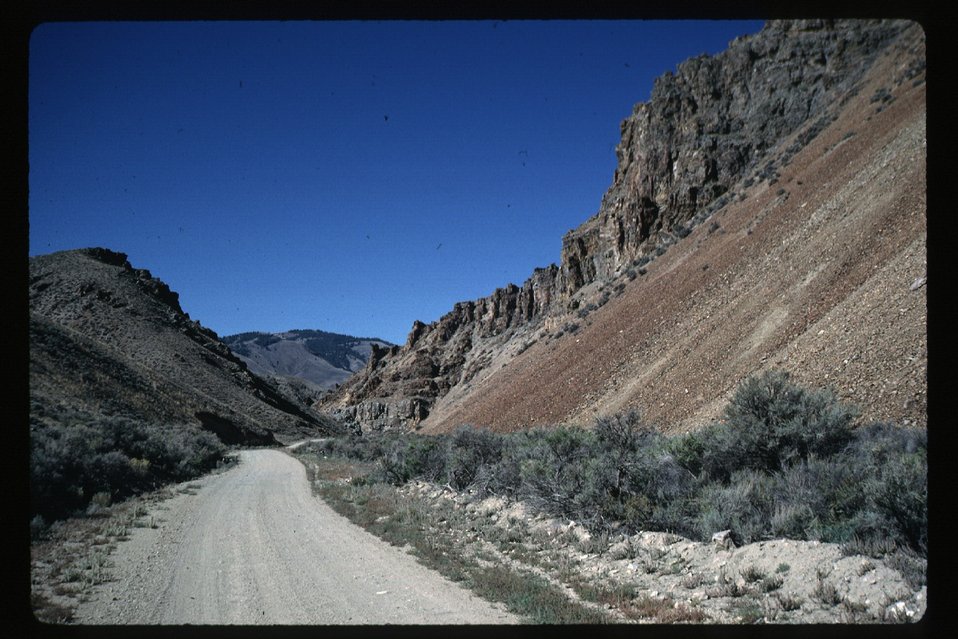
Rocky Canyon Boise Foothills Four Rivers Field Office LSRD Lower Snake River District